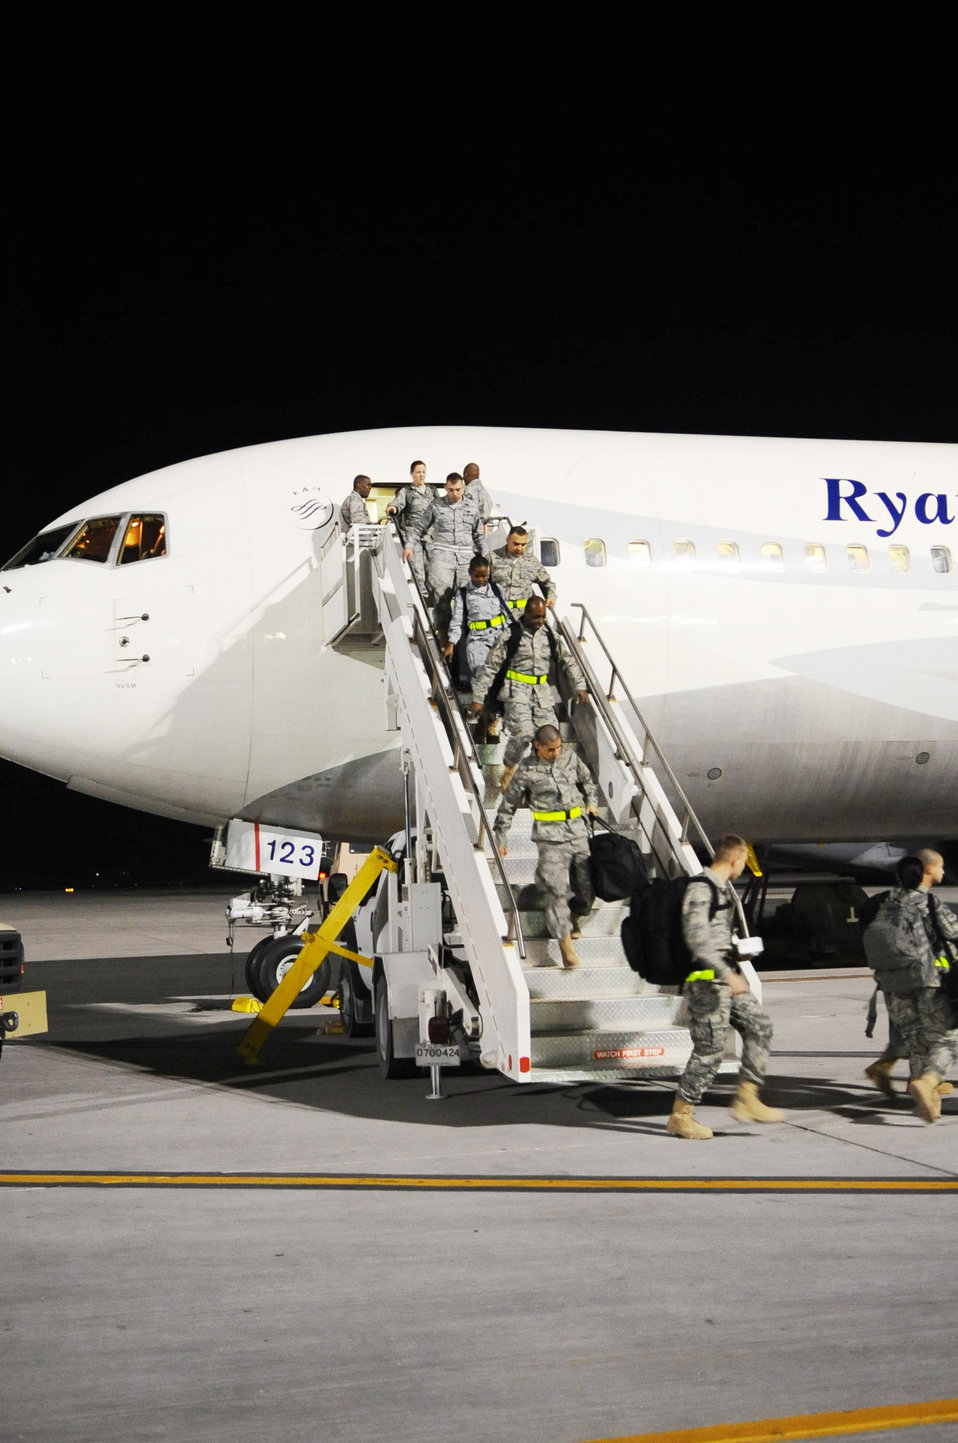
We're here!

Servicemembers arrive at a deployed location in Southwest Asia Jan. 4, 2010. Members are deployed in various roles supporting operations Iraqi Freedom and Enduring Freedom.